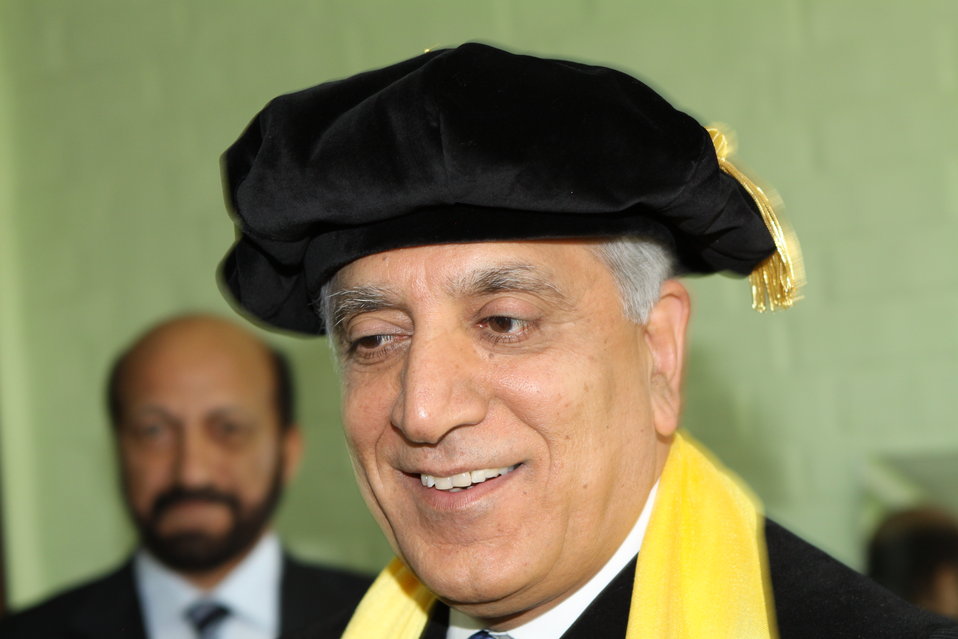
100526 AUAF Graduation 079